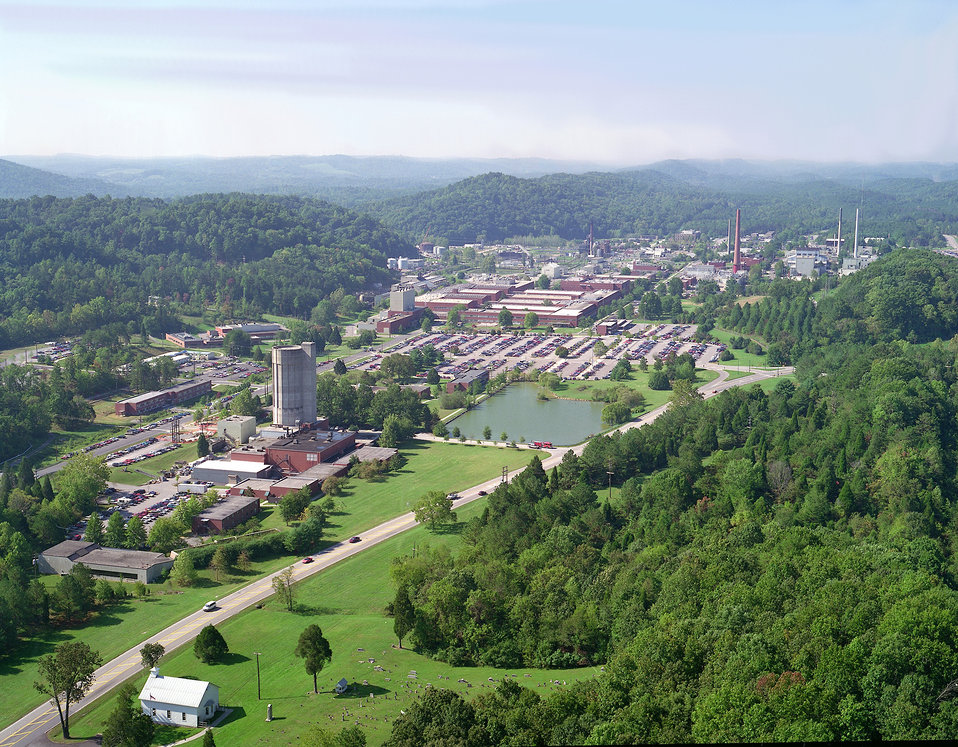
ORNL Aerial 1995

An aerial of the Oak Ridge National Laboratory in 1995.